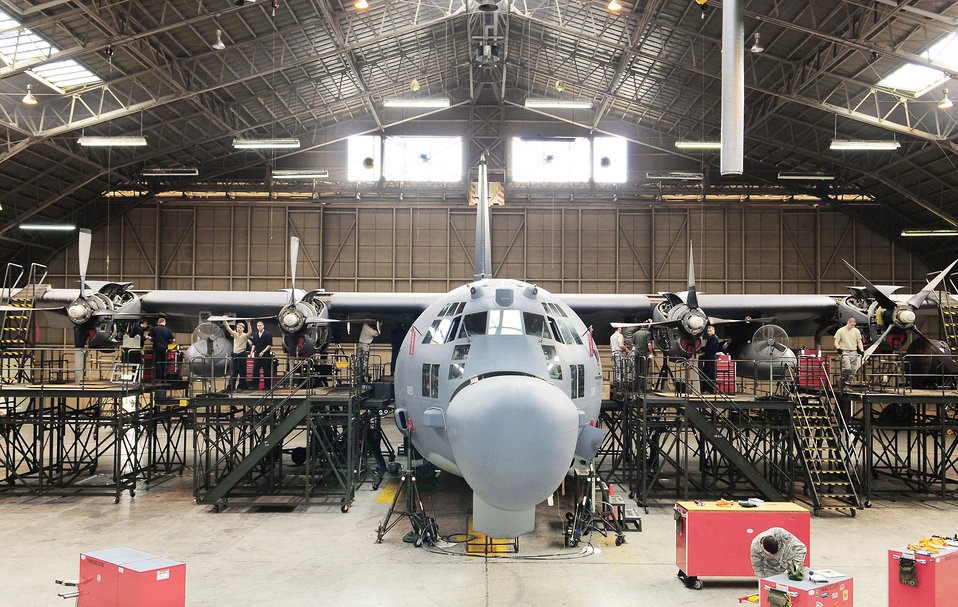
Yokota maintainers use AFSO21 to improve C-130 inspection process

A C-130 Hercules undergoes an isochronal inspection March 16, 2010, at Yokota Air Base, Japan. An ISO inspection consists of a 14-day detailed inspection before the plane is ready for re-launch.